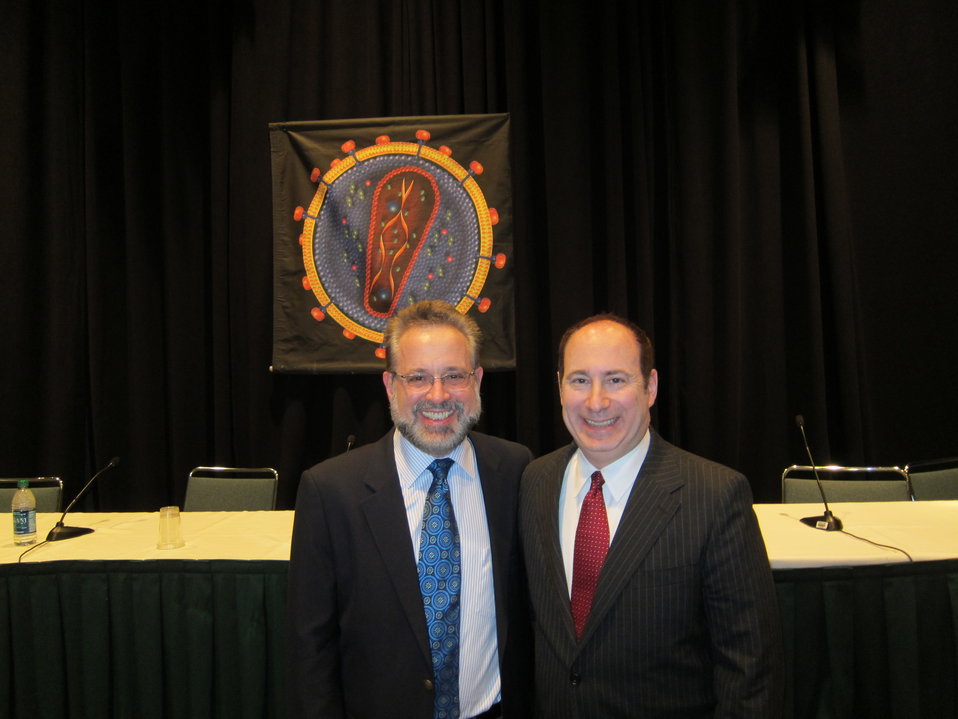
Drs V. and Horberg to be used for our podcast from CROI highlighting a PACHA member